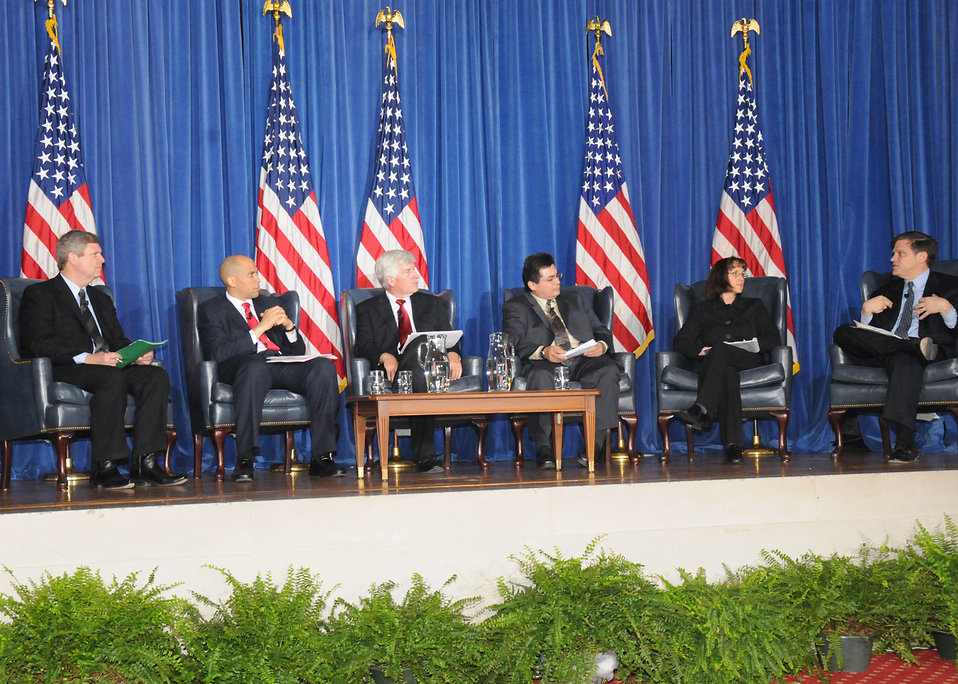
Agriculture Secretary Tom Vilsack hosts a panel discussion about “Conserving working lands for the benefit of all Americans” at the Department of Interior in Washington, D. C., on Friday, April. 16, 2010. Members of the panel (L to R) Mayor of Newark, N.J. Cory Booker, Indiana farmer and conservationist Ray McCormick, Vice President of the Archibald Bush Foundation and Nations Team Leader Jamie Pinkham, Western Policy Manager at the Land Trust Alliance, Lynne Sherrod, and author and historian Douglas Brinkley. USDA photo 10di1316-96